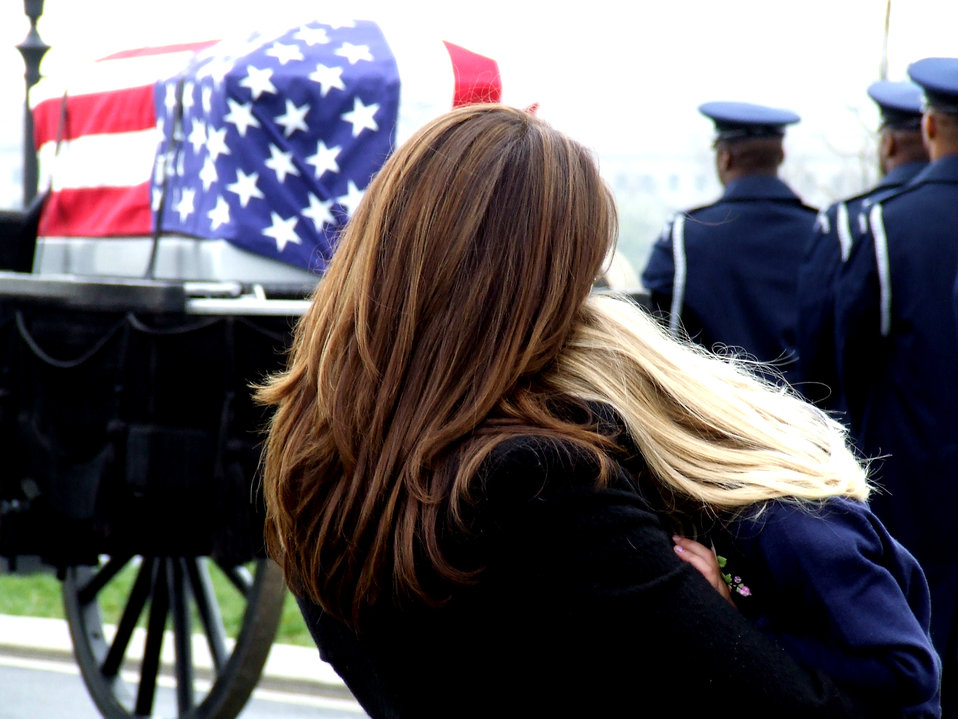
POW/MIA bracelet presented to family

Family members of former missing in action Airman, Maj. Robert F. Woods, watch as the caisson carrying him is prepared to move to a grave site April 9 at Arlington National Cemetery in Virginia. On Nov. 30, 2007, the Air Force announced that Major Woods, along with co-pilot Capt. Johnnie C. Cornelius, were identified and their remains returned to the United States from Vietnam. On June 26, 1968, Major Woods and Captain Cornelius were flying a visual reconaissance mission over Quang Binh Province, Vietnam, when their O-2A Skymaster aircraft crashed in a remote mountainous area. Major Woods was buried with military honors nearly 40 years after he disappeared in the crash.